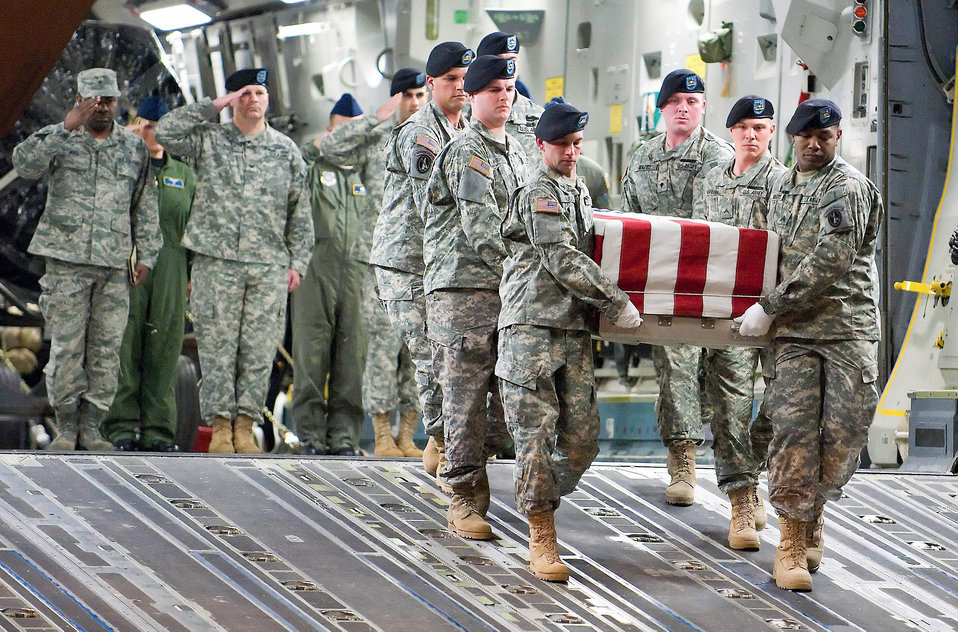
The life of a port mortuary chaplain

Chaplain (Maj.) Klavens Noel (far left) along with a senior Army and Air Force officers salute a transfer case as an Army carry team transfers remains at Dover Air Force Base, Del. After Defense Secretary Robert M. Gates approved a policy change in April allowing media filming of dignified transfer operations, more and more family members now attend the transfers. Chaplain Noel is a port mortuary chaplain at the Air Force Mortuary Affairs Operations Center at Dover AFB.